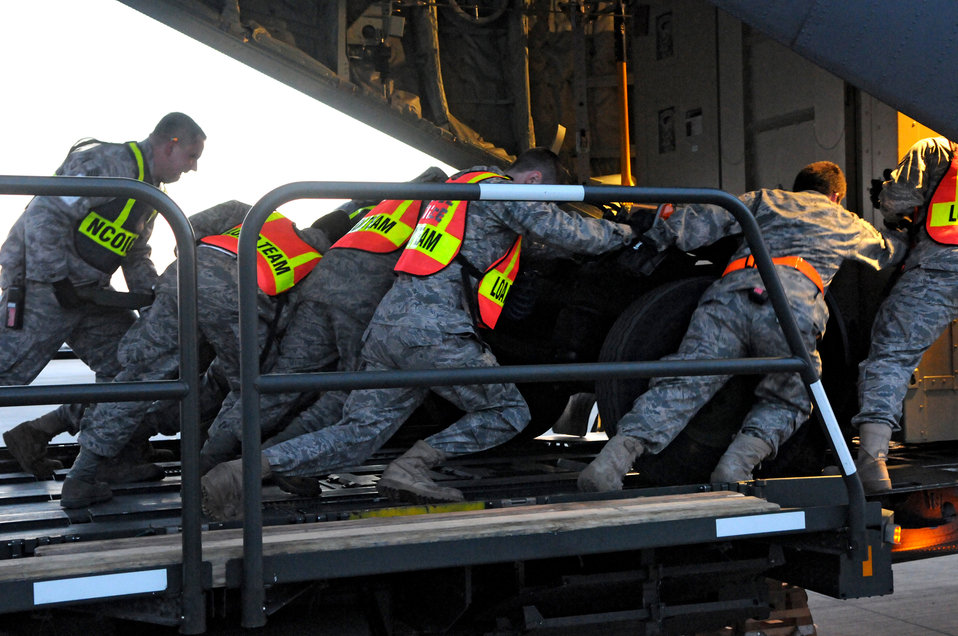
Operation Odyssey Dawn

SPANGDAHLEM AIR BASE, Germany ? Airmen from the 52nd Logistics Readiness Squadron push cargo into a C-130J Super Hercules here in support of Operation Odyssey Dawn March 21. Joint Task Force Odyssey Dawn is the U.S. Africa Command task force established to provide operational and tactical command and control of U.S. military forces supporting the international response to the unrest in Libya and enforcement of United Nations Security Council Resolution (UNSCR) 1973. UNSCR 1973 authorizes all necessary measures to protect civilians in Libya under threat of attack by Qadhafi regime forces. JTF Odyssey Dawn is commanded by U.S. Navy Admiral Samuel J. Locklear, III.